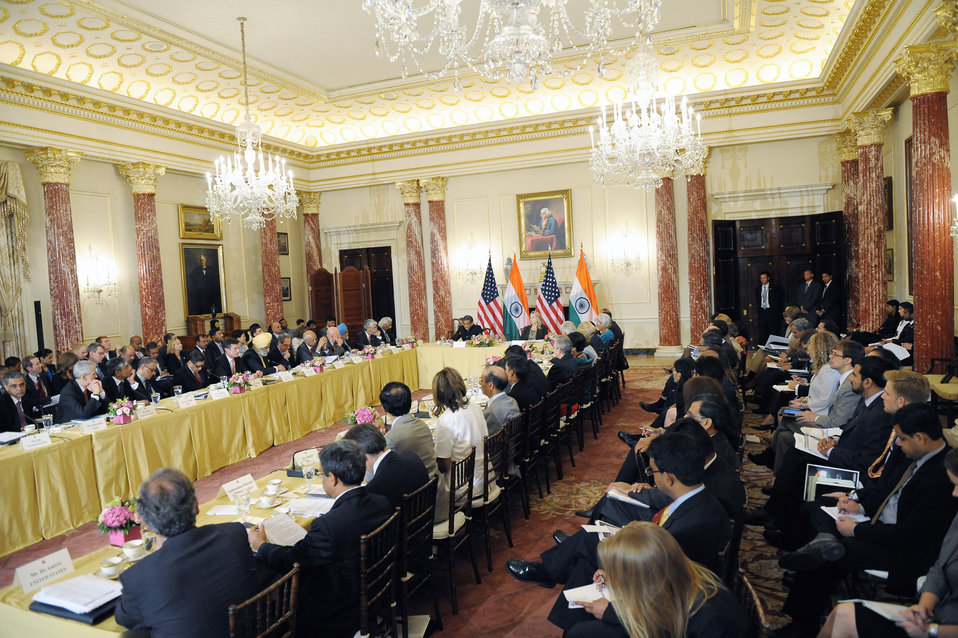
Secretary Clinton Delivers Remarks at the U.S.-India Strategic Dialogue

U.S. Secretary of State Hillary Rodham Clinton delivers remarks at the U.S.-India Strategic Dialogue at the Department of State in Washington, D.C. on June 13, 2012.